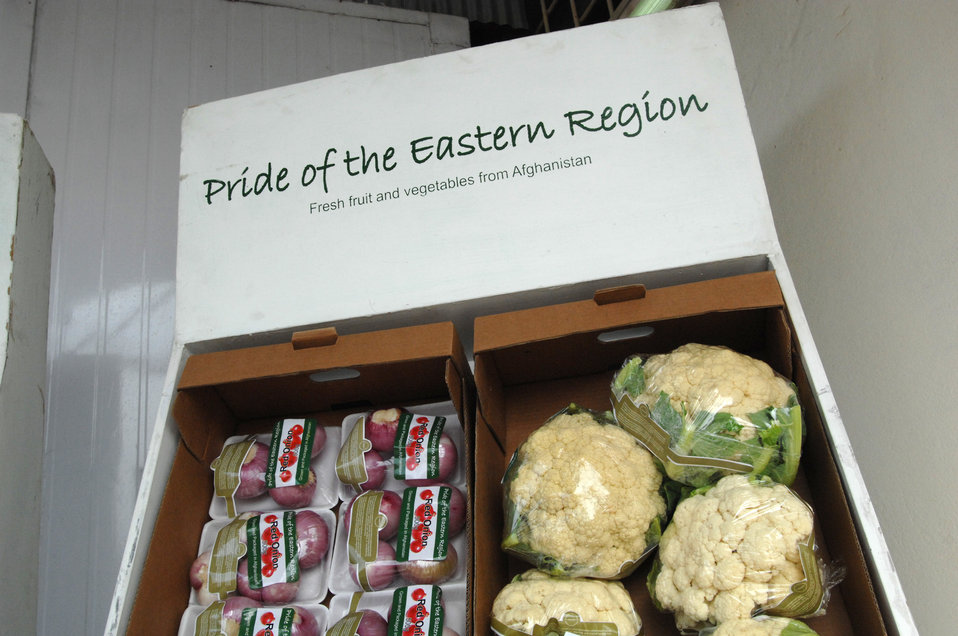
110209sv Shah292

Vegetables on display at the Surkh Rod vegetable packing facility in Surkh Rod, Nangarhar Province, on Wednesday, February 9, 2011. (S.K. Vemmer/Department of State)